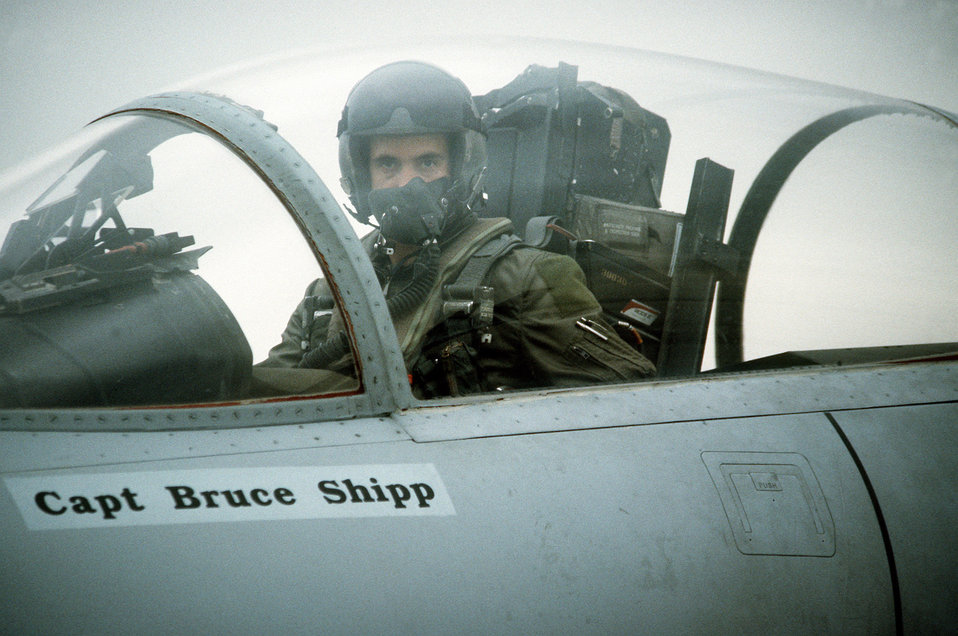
F-15 Eagle Fighter

1990's -- U.S. Air Force Capt. Bruce Shipp, pilot of an F-15 Eagle Fighter aircraft, prepares for takeoff to attack enemy positions in Kuwait during Operation Desert Storm.